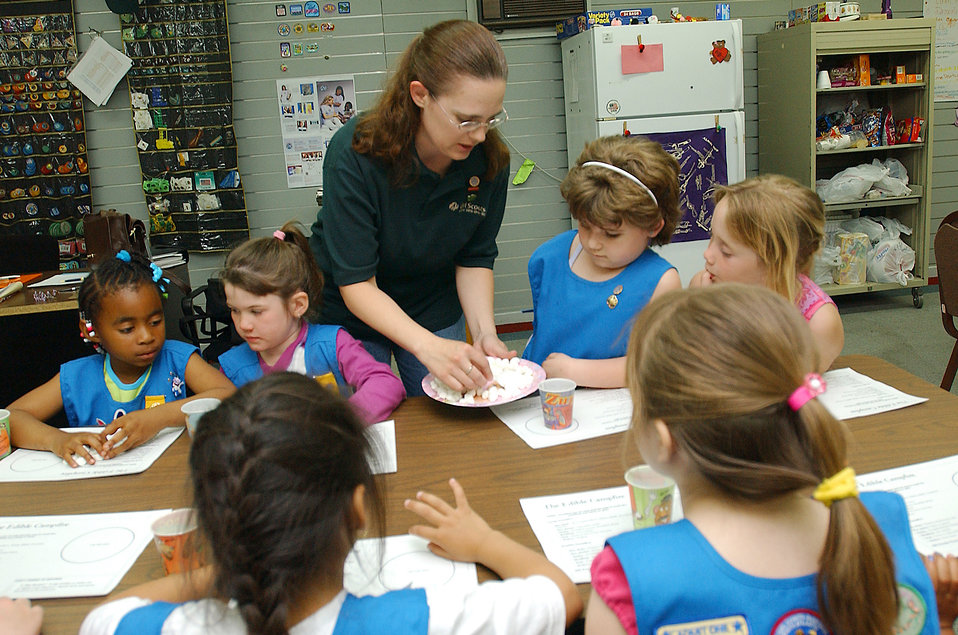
National Volunteer Week

INCIRLIK AIR BASE, Turkey -- Tech. Sgt. Donna Pena passes out marshmallows to Girl Scouts to build an edible campfire. She is the 39th Air Base Wing assistant law office manager here and a Girl Scout volunteer.